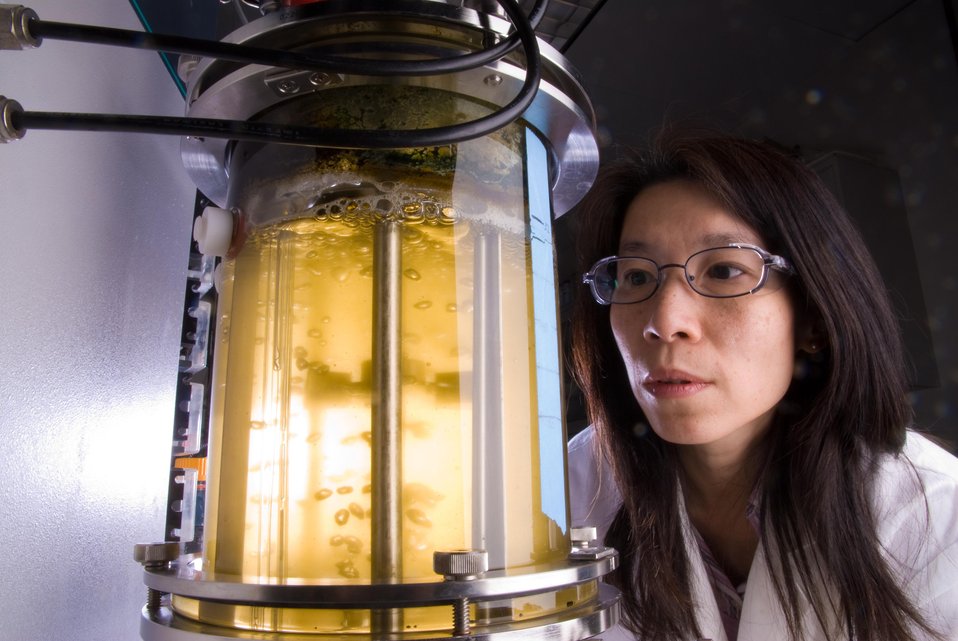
SHOWN IS AN ALGAE PHOTO BIOREACTOR AT NREL.

A NREL researcher examines an algae photobioreactor, which uses light energy and carbon dioxide to grow algae by photosynthesis. The researchers are studying microalgae as a potential source of biofuels.